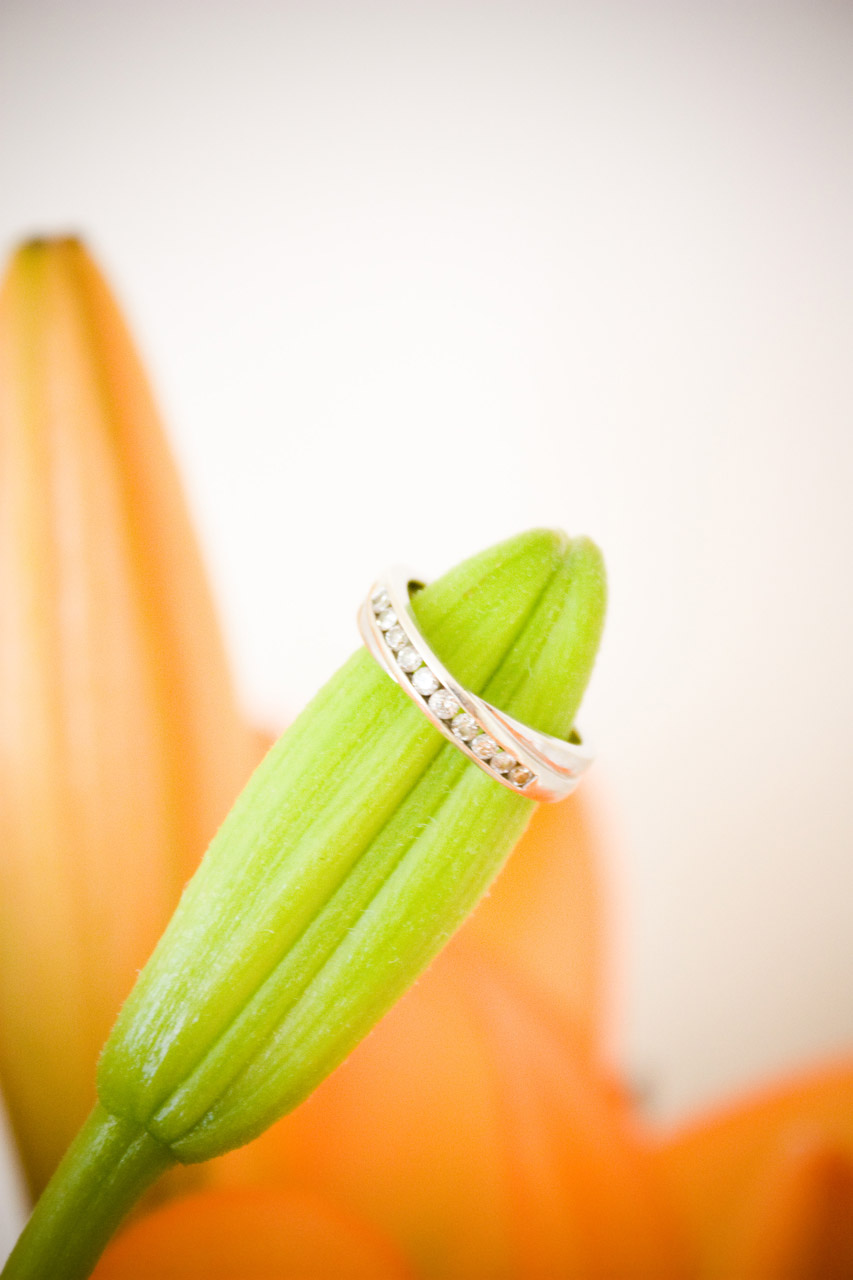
Engagement ring.